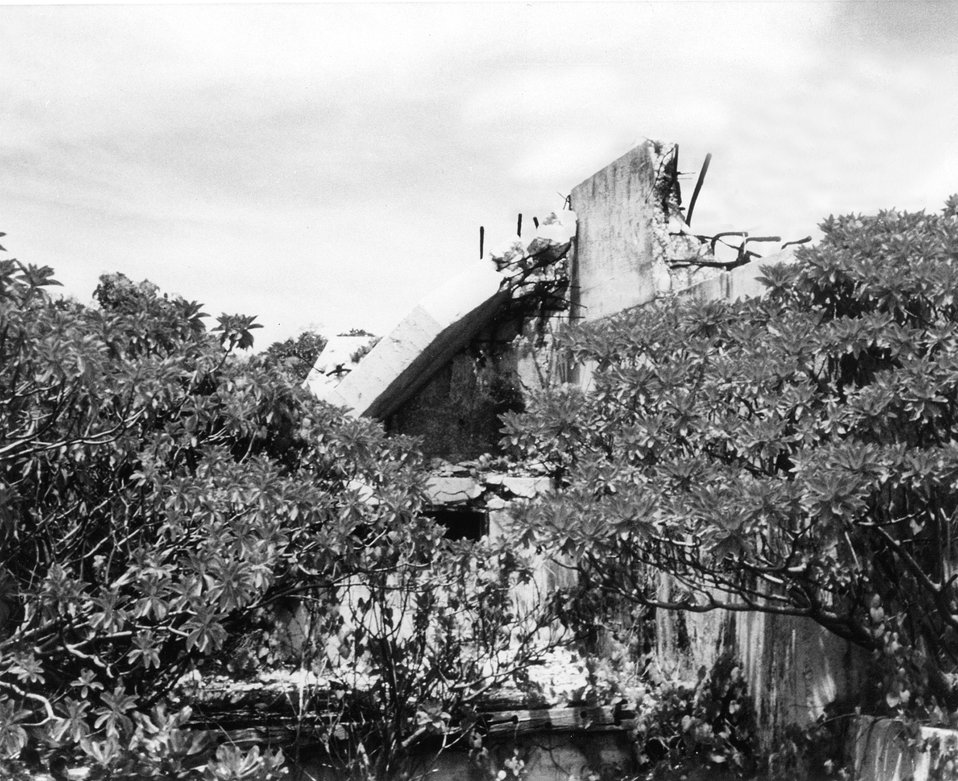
A little more than ten years after the last nuclear weapons test at Bikini Atoll, , the Bikini people were given reassurance they could return home.